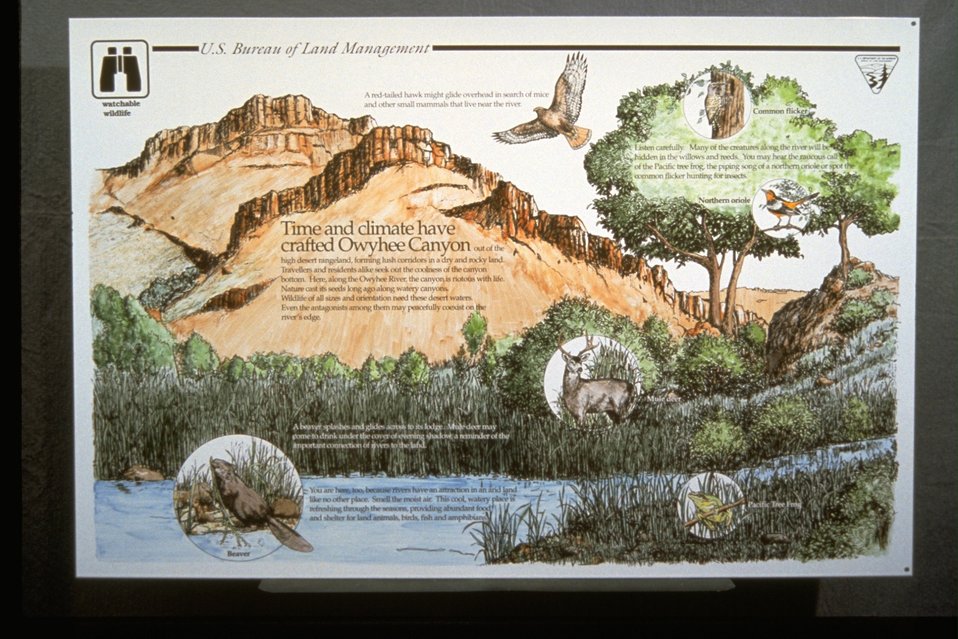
Close-up of interpretive panel discussing ecosystem of Owyhee Canyon.